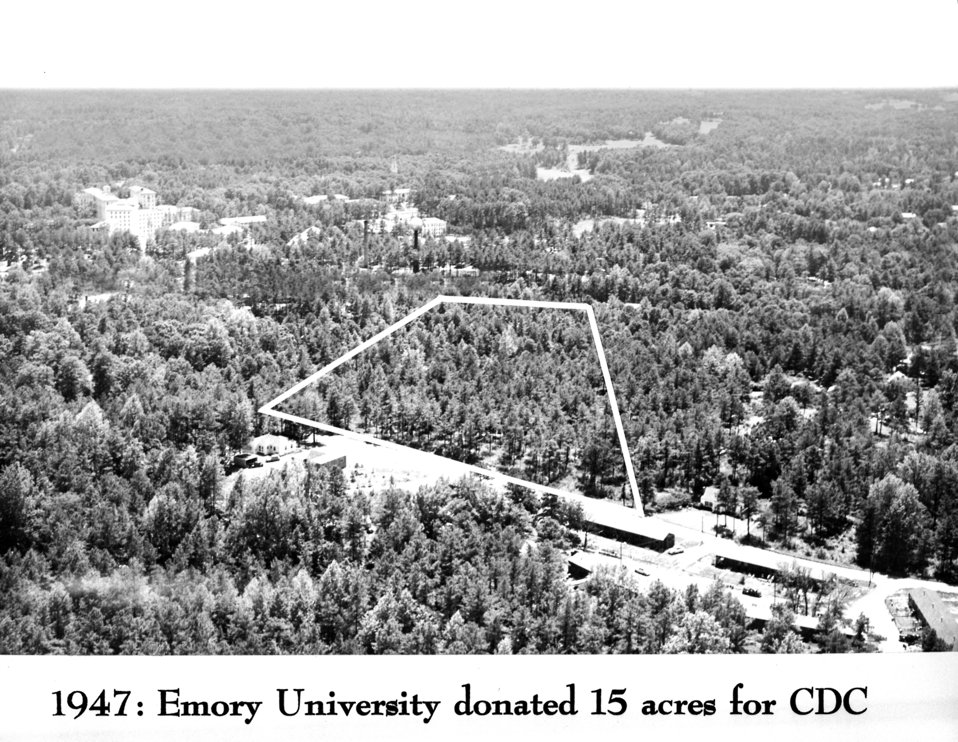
The 15 acres of land donated to CDC in 1947, that would eventually become the site of the Clifton Road, Roybal.